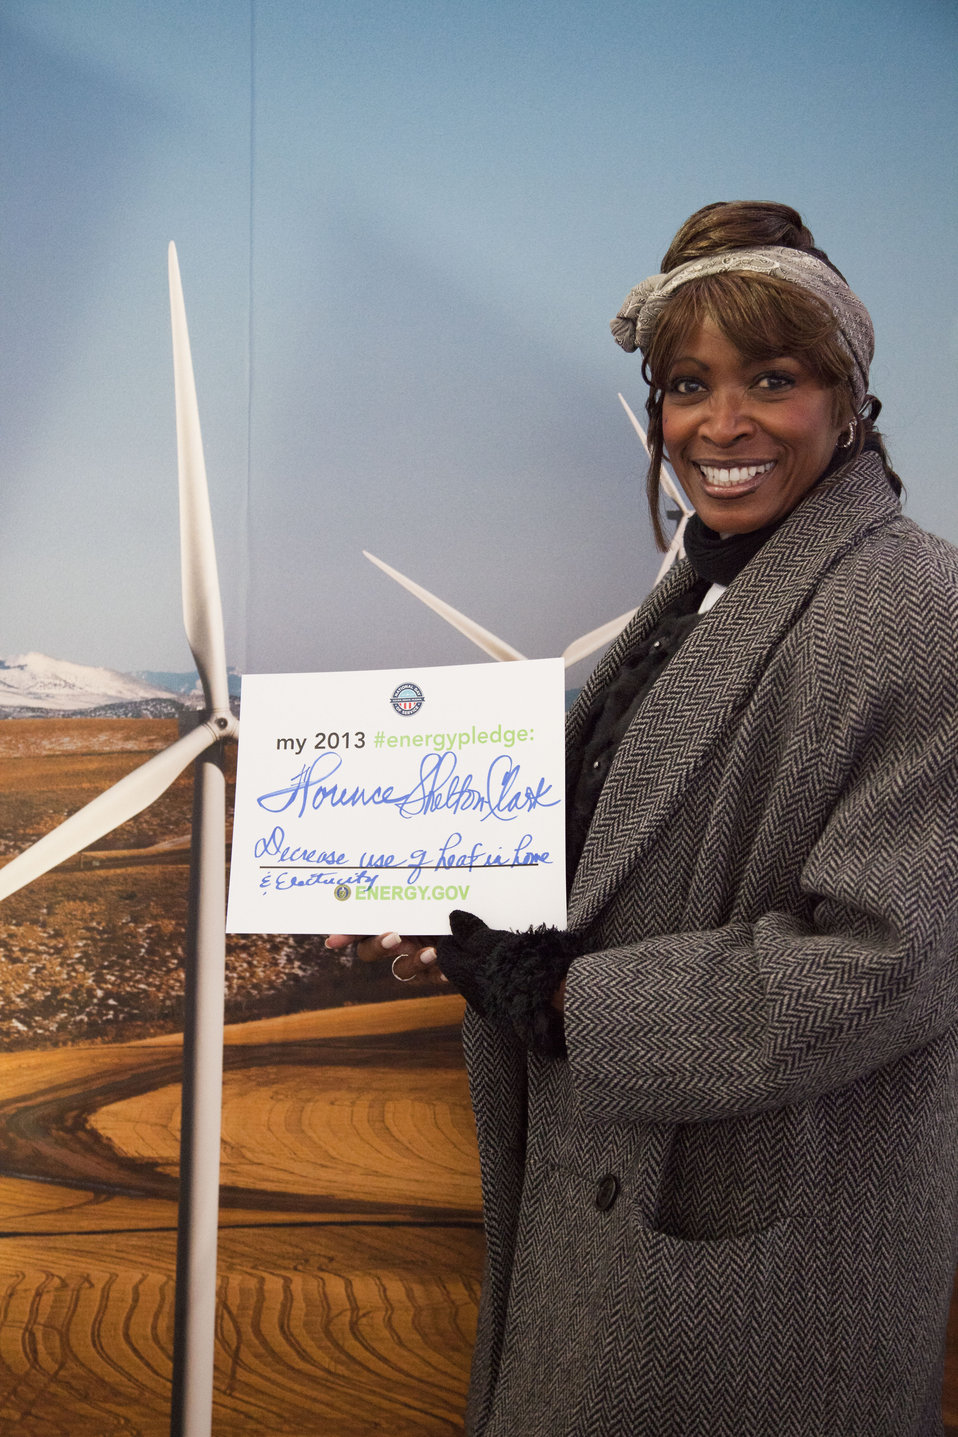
What's your #energypledge?